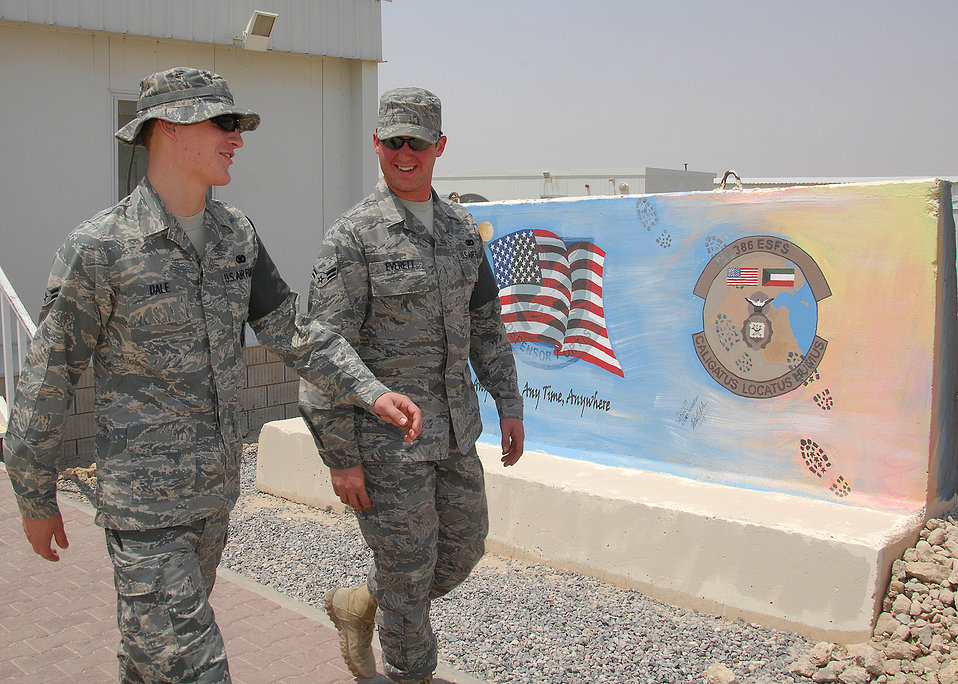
Everett

SOUTHWEST ASIA -- Airman 1st Class William Dale, left, and Airman 1st Class Thomas Everett, both assigned to the 386th Expeditionary Security Forces Squadron, talk on Aug. 26 about how quick thinking avoided a tragic incident at an air base in Southwest Asia. During a cargo mission in early August, Airman Everett saved Airman Dale from possible brain damage by oxygen deprivation. Airman Everett has been nominated for the Airman's Medal for his efforts. Both Airmen are deployed from Nellis Air Force Base, Nev.